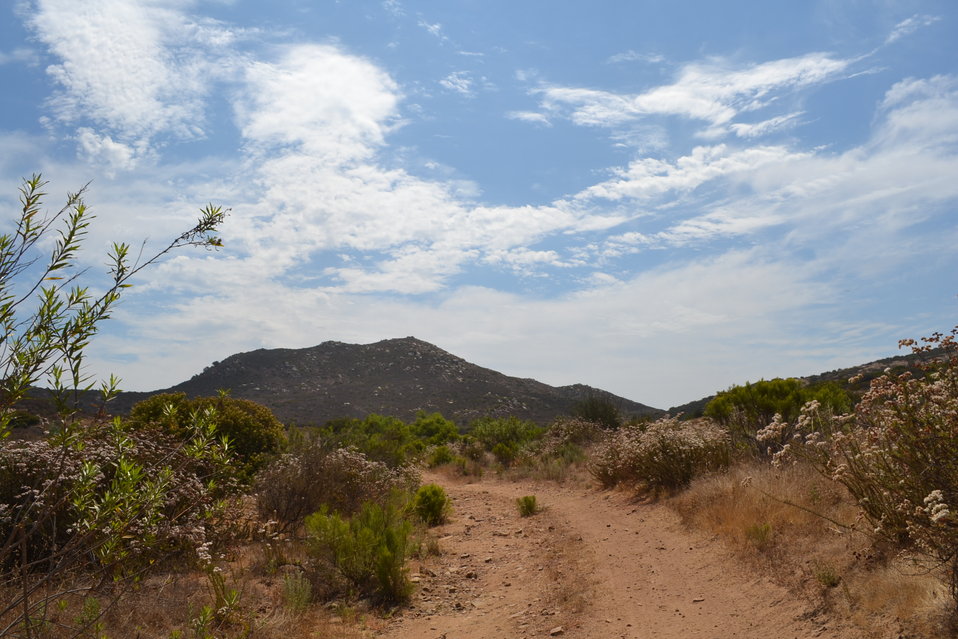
Hidden Valley Ribbon Cutting

(USFWS)